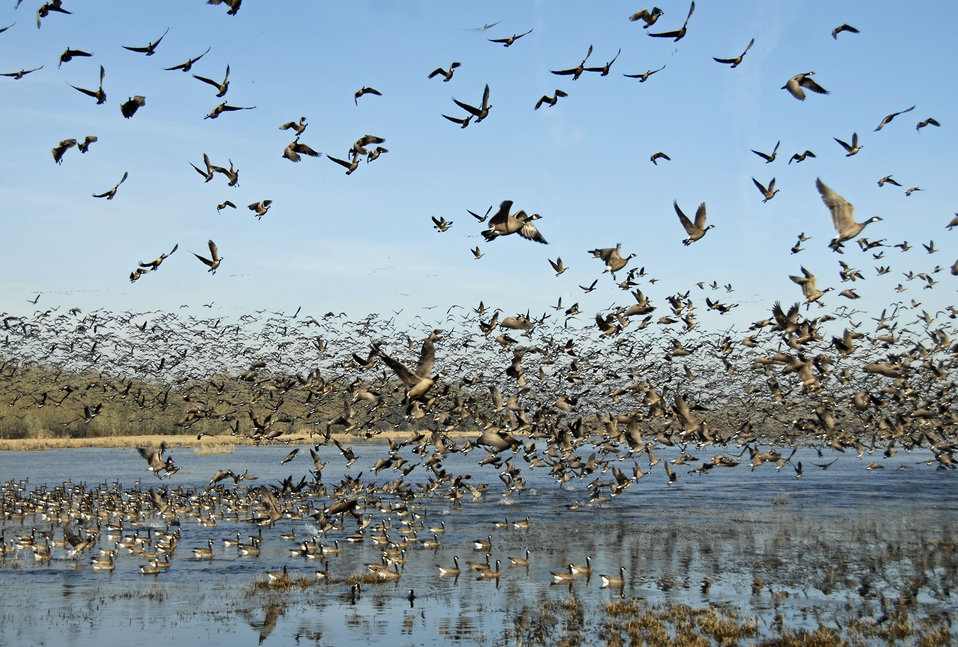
Birds in flight at McFadden Marsh 3 --- Finley National Wildlife Refuge.